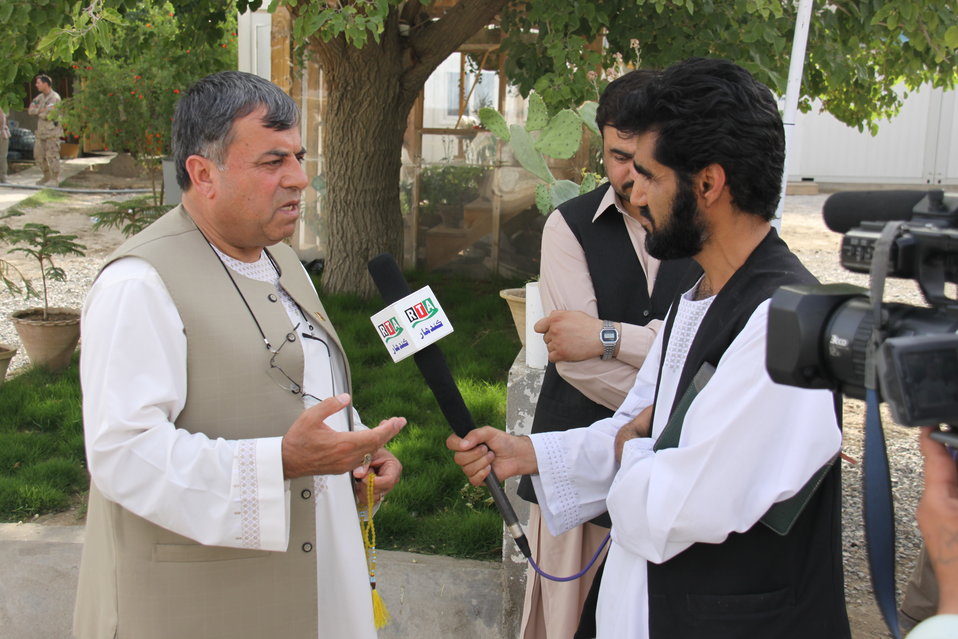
Meeting with Local Leaders in Kandahar